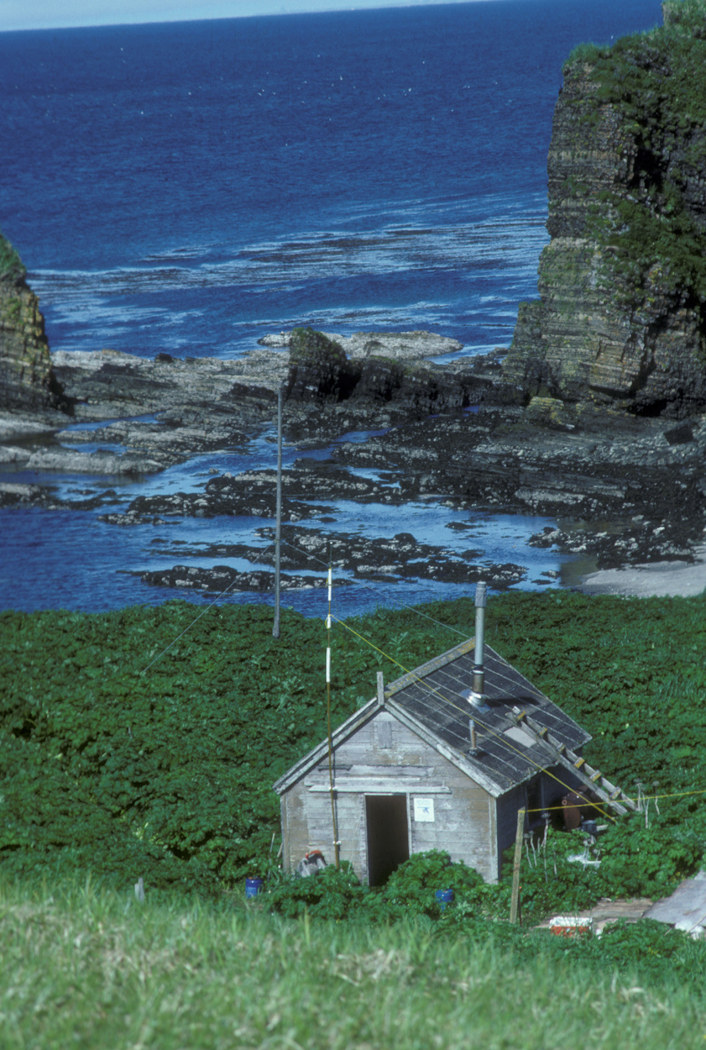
Agattu Island, refuge cabin, Aleutians 1988.